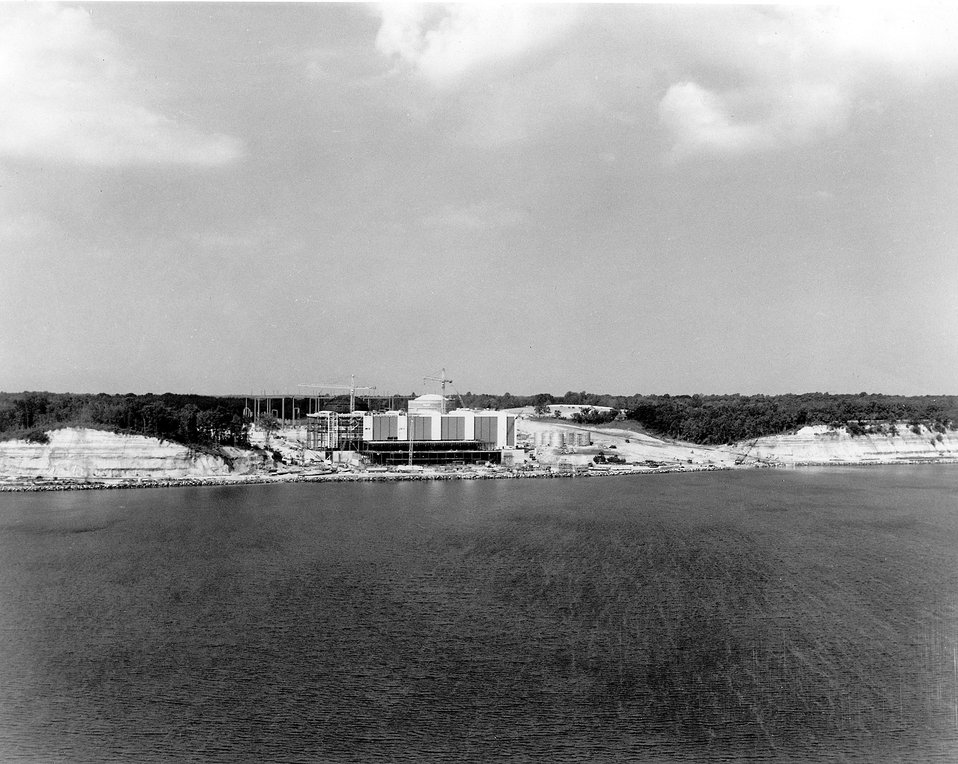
Aerial view from Chesapeake Bay of Baltimore Gas and Electric's Calvert Cliffs Nuclear Power Plant. Circa 1971.